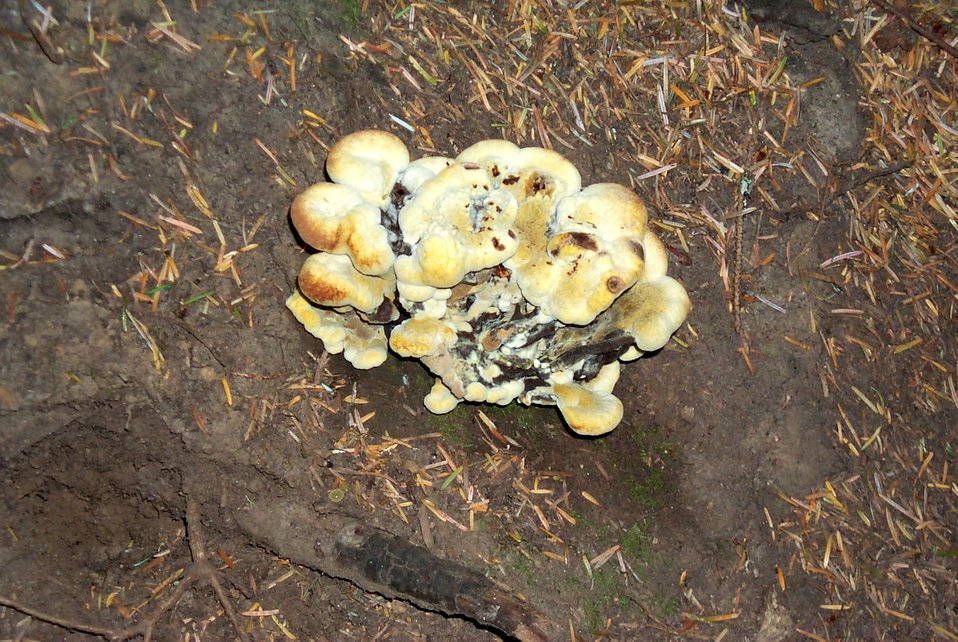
Yellow fungi at the base of a tree.